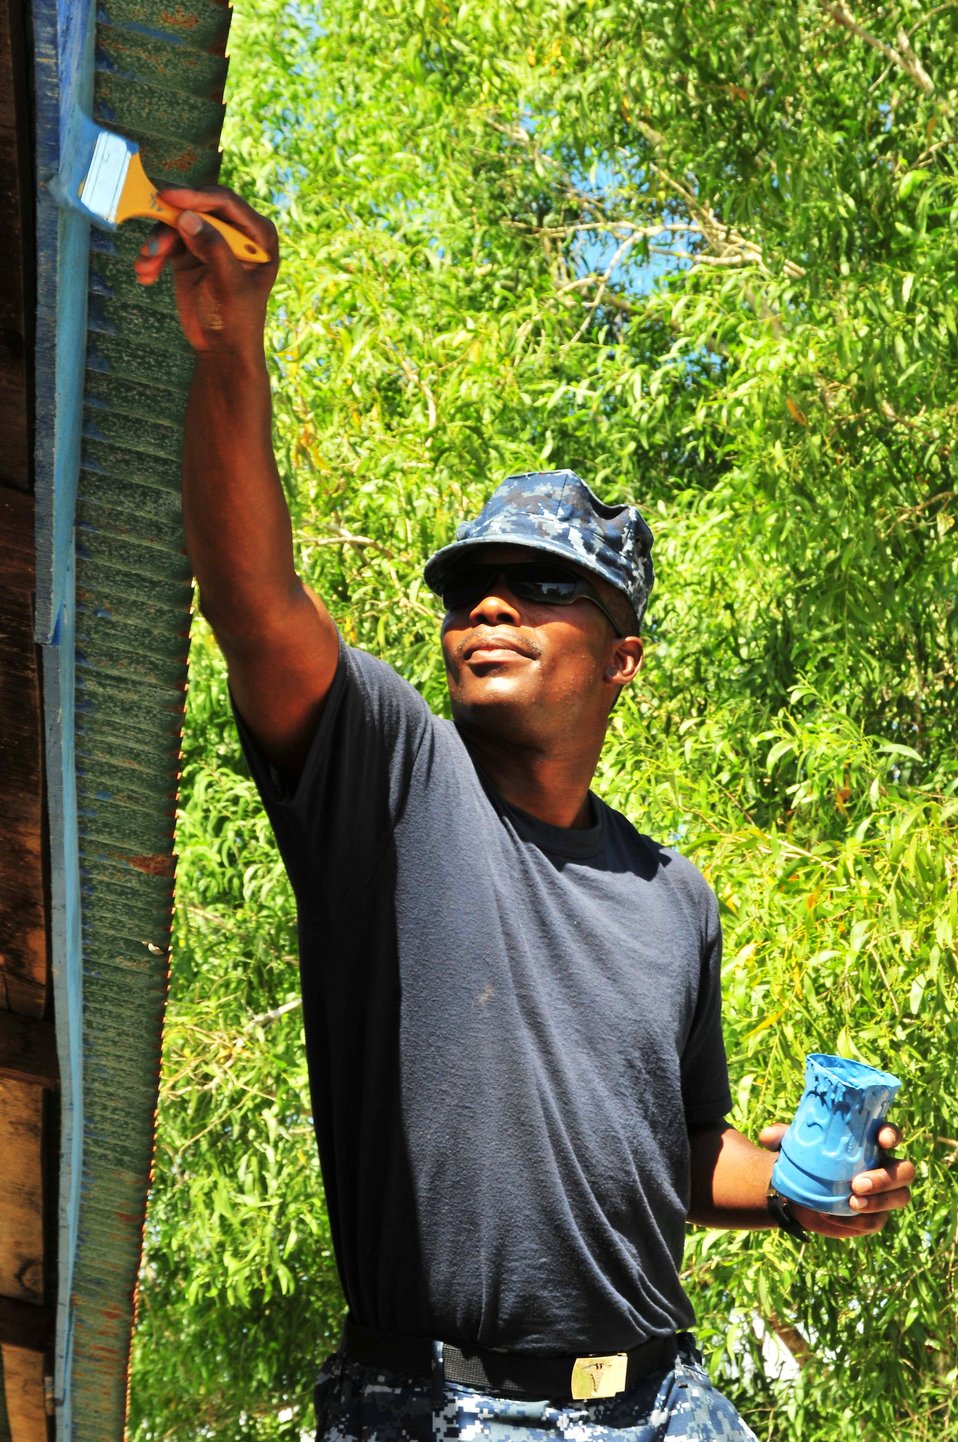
Hospital Corpsman Darrell Stamper helps paint the Andaung Thma School during an engineering civic action program in support of Pacific Partnership 2010 on June 24, 2010, in Sihanoukville, Cambodia. The Military Sealift Command hospital ship USNS Mercy (T-AH 19) is in Cambodia conducting the fifth in a series of annual U.S. Pacific Fleet humanitarian and civic assistance endeavors to strengthen regional partnerships.